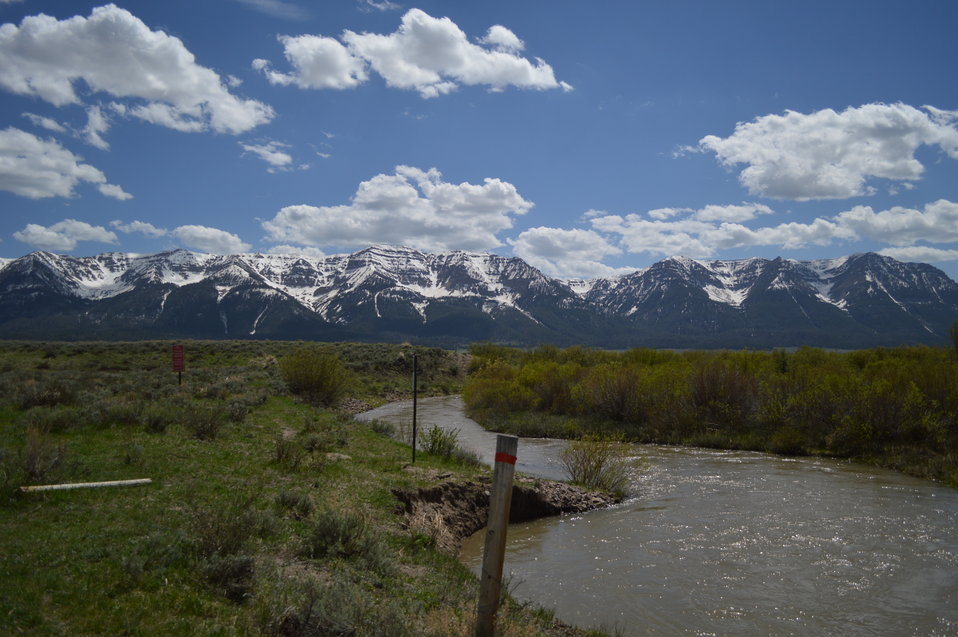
Regional Leadership Visit to Montana 2014